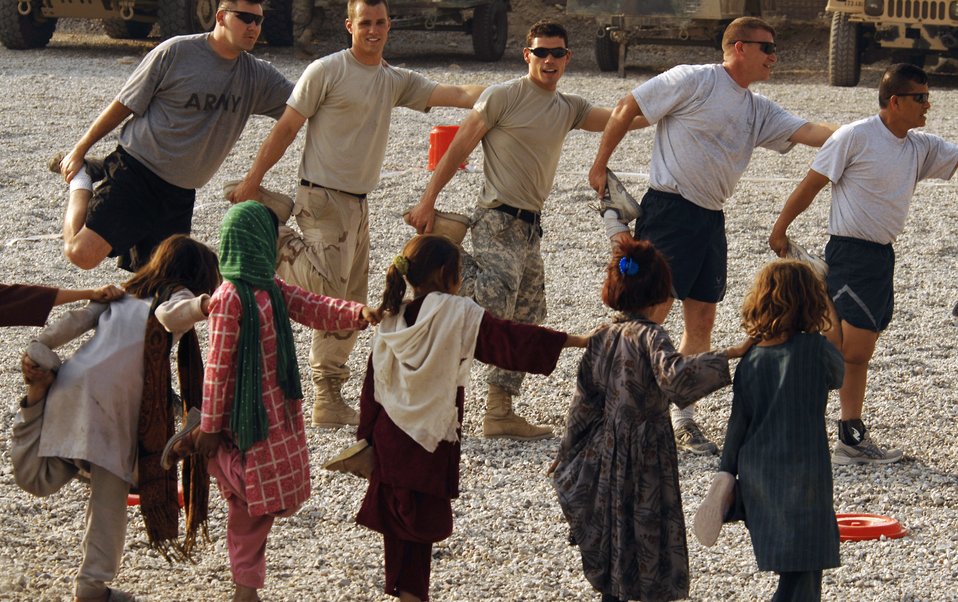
Getting ready for the big game

Airmen and Soldiers from the Nangarhar Provincial Reconstruction Team lead stretching exercises Nov. 9 in Jalalabad, Afghanistan, with children from the local community before they play soccer together.